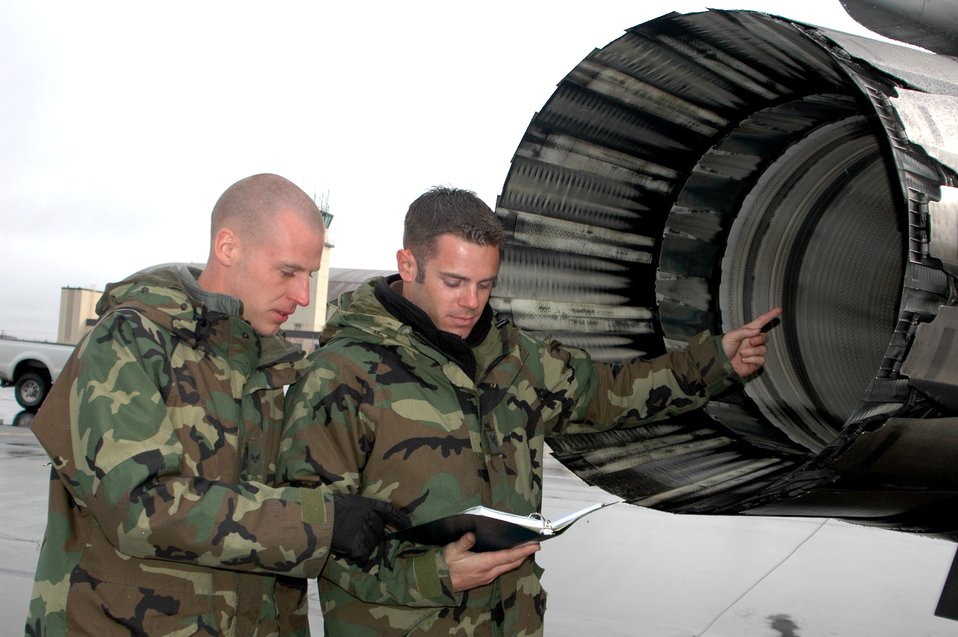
Weather can't stop desert-dwelling Airmen at Red Flag-Alaska

Senior Airman Richard Adamowich and Staff Sgt. Craig Bair conduct preflight inspections on an F-16 Fighting Falcon April 13 on the flightline at Eielson Air Force Base, Alaska. Airmen from the 61st Fighter Squadron at Luke AFB, Ariz., are at Eielson AFB in support of Red Flag-Alaska, a multi-service, multi-platform, combat-operations exercise involving the coalition forces of France and Australia. Airman Adamowich, an avionics journeyman, and Sergeant Bair, a crew chief, are assigned to the 61st FS.